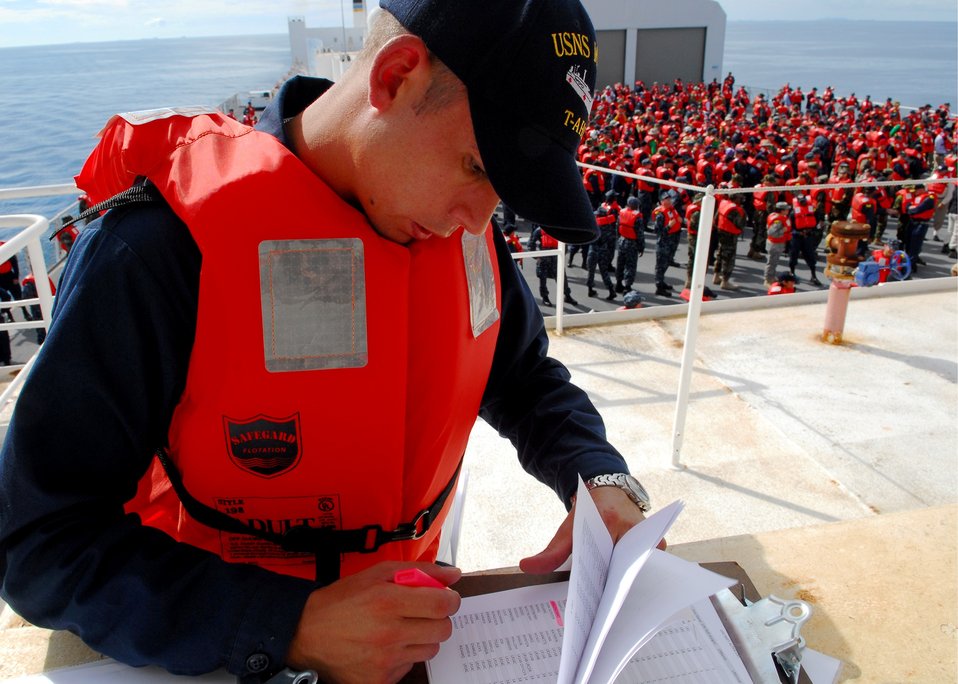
Personnelman Cory Merchant takes muster during an abandon ship drill aboard the Military Sealift Command hospital ship USNS Mercy (T-AH 19) on July 6, 2010, while Mercy transits the South China Sea during Pacific Partnership 2010, the fifth in a series of annual U.S. Pacific Fleet humanitarian and civic assistance endeavors to strengthen regional partnerships.